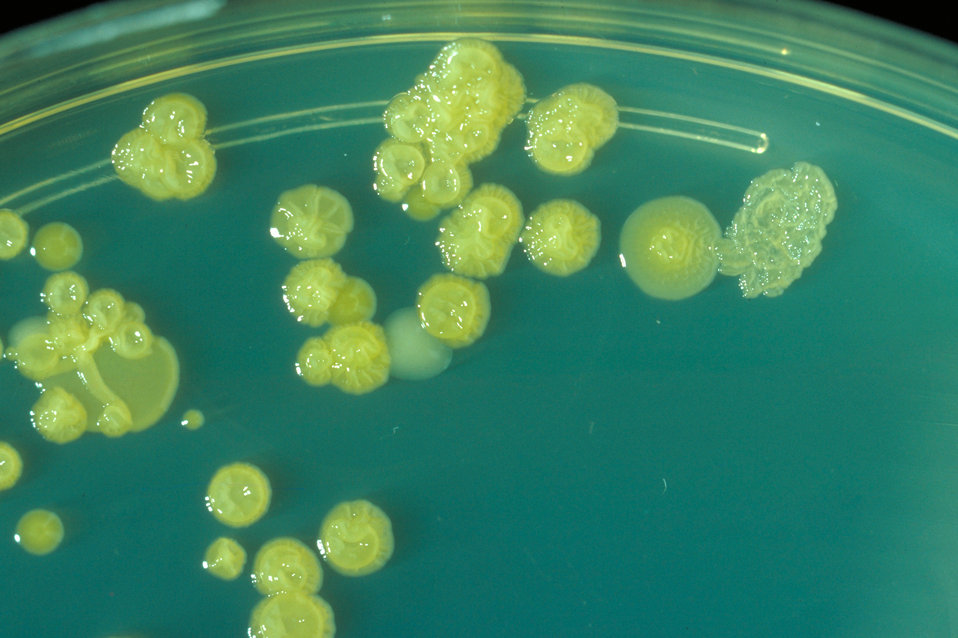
This is a trypticase soy agar plate culture of E. sakazakii showing wrinkled colonies after three days at 25� C.